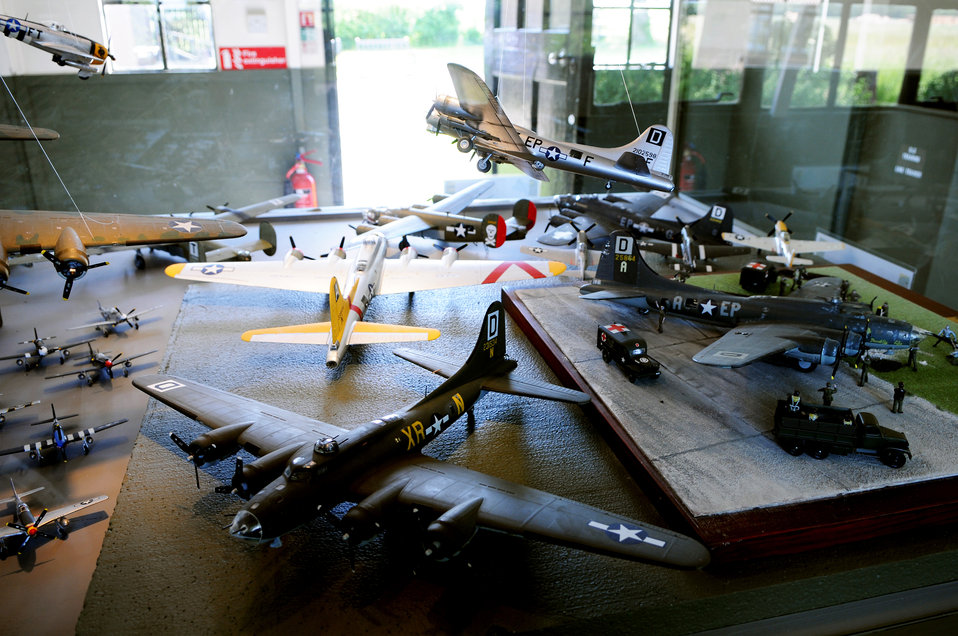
World War II vets visit former home

A display of model aircraft, many of which display the same